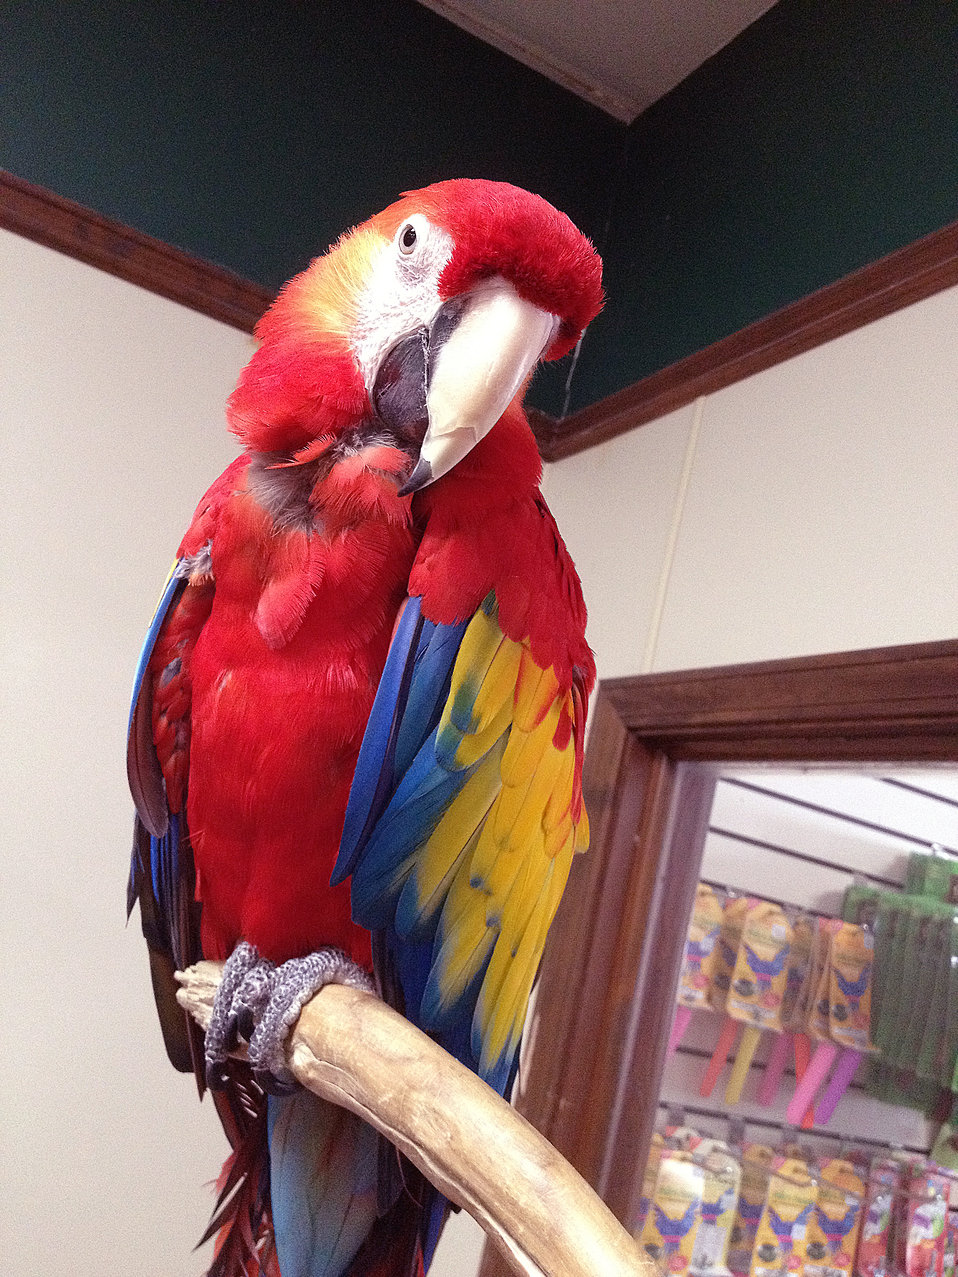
This image depicts a beautifully-colored adult parrot known as a Scarlet Macaw, or Aracanga, Ara macao, which can be found in its native habitat of the tropics of the Americas.